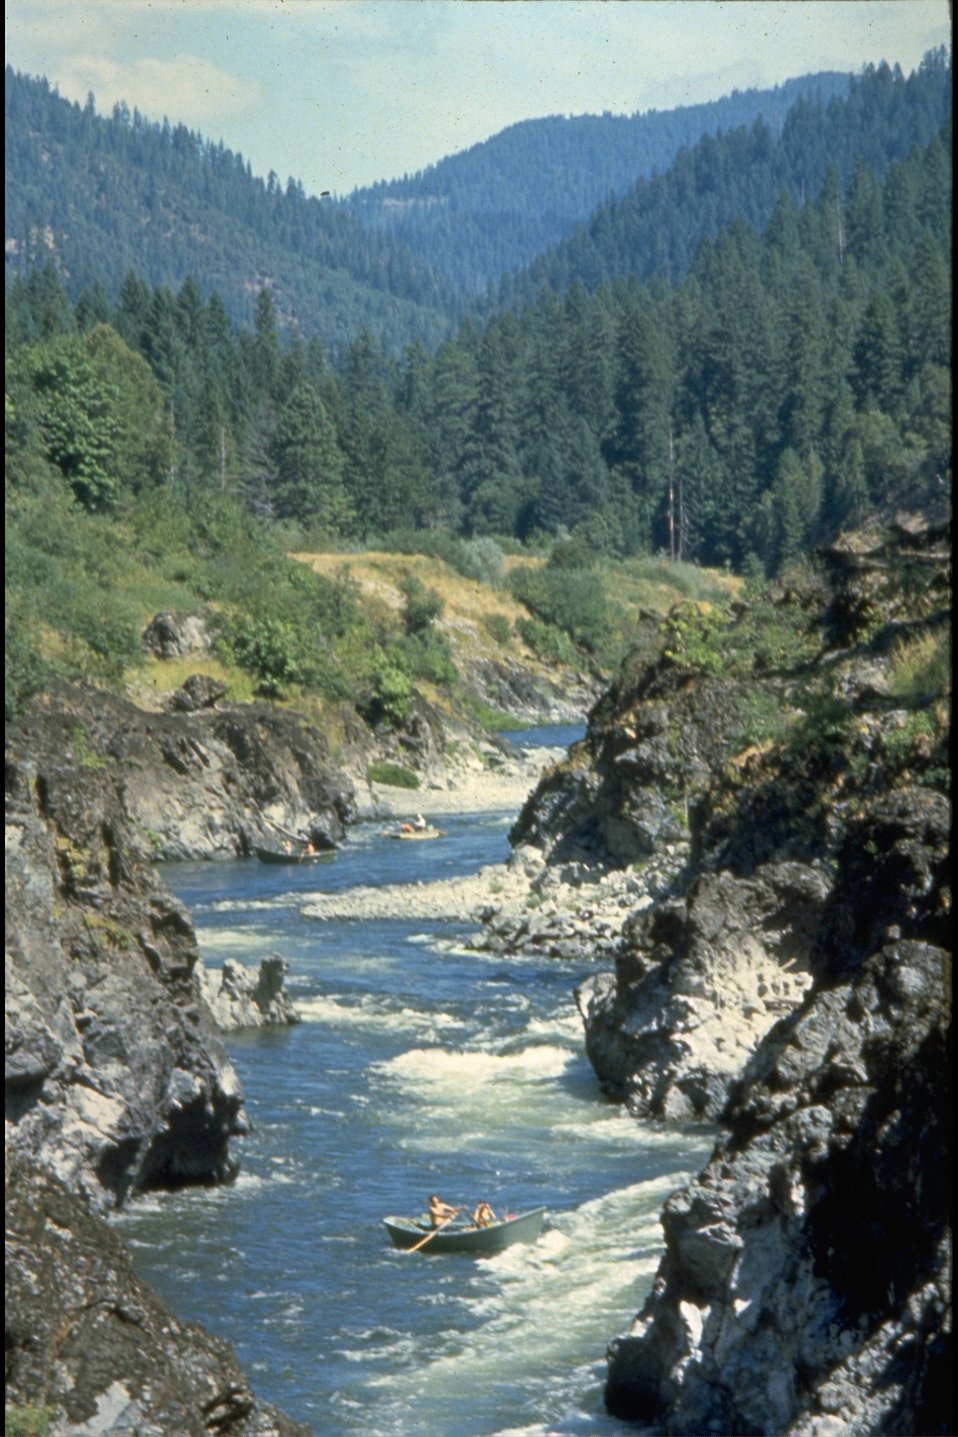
Mule Creek area, wild section of the Rogue River.